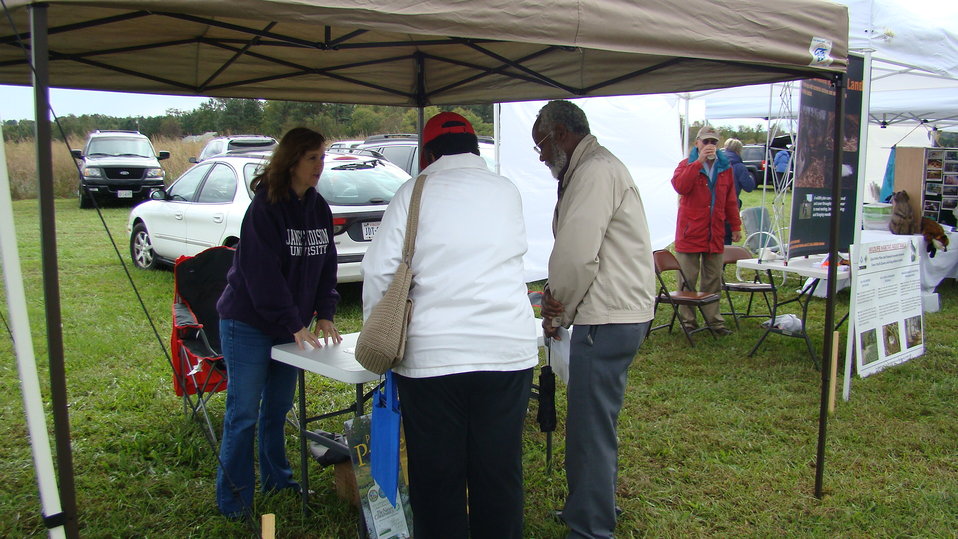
Rappahannock River Valley NWR 15th Anniversary

Fort A.P Hill display at 'Go Wild!'